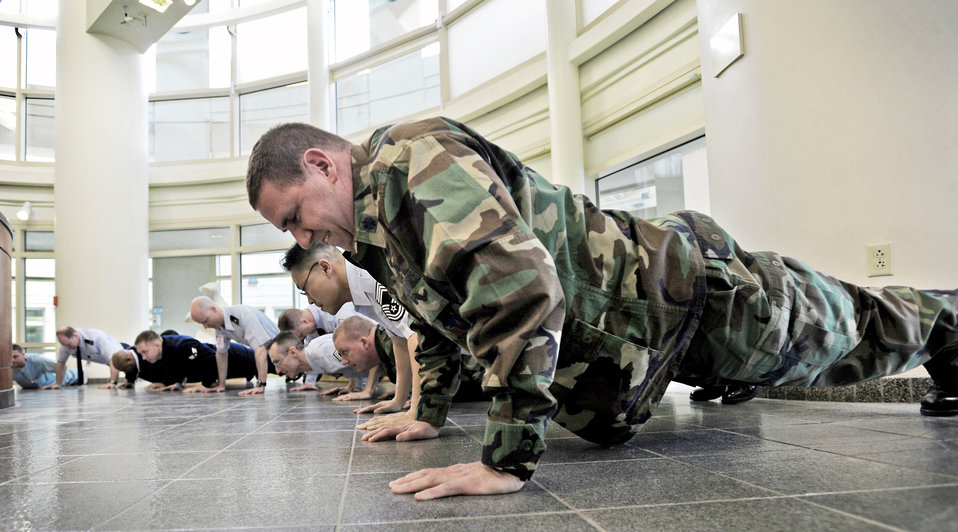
Elmendorf Airmen complete million push-up challenge

Lt. Col. Jeffrey Medland completes push-ups as part of the 100-day million push-up challenge March 29, 2010, at Elmendorf Air Force Base, Alaska. In an attempt to improve PT scores and unit camaraderie, 425 Elmendorf AFB Airmen did 1,184,957 push-ups in 100 days. Colonel Medland is assigned to the 3rd Medical Operations Squadron.